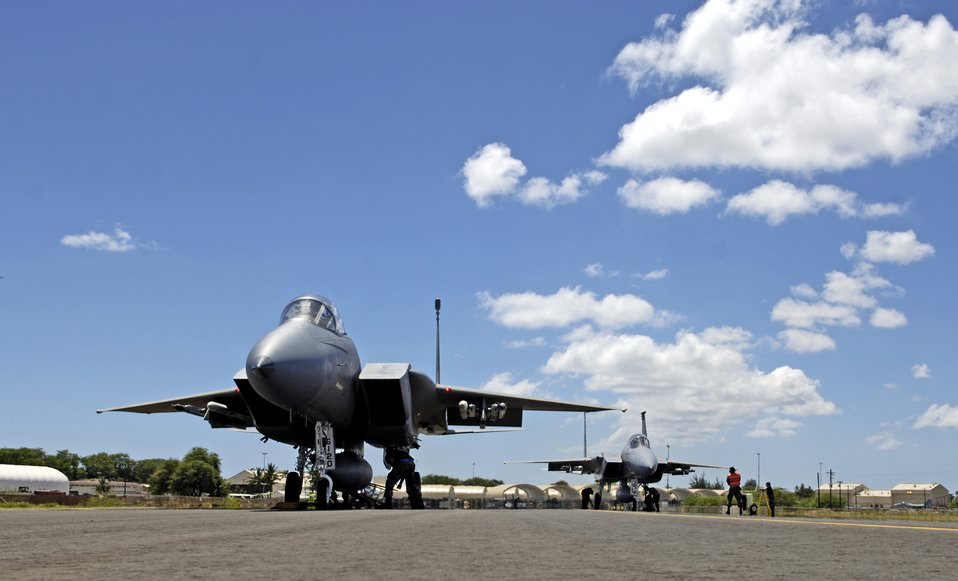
Eagles, Falcons face off in air exercise

F-15 Eagles get a last-minute check before taking off from Hickam Air Force Base, Hawaii, Sept. 8 during Exercise Sentry Aloha. The F-15s are from the Hawaii Air National Guard's 199th Fighter Squadron.